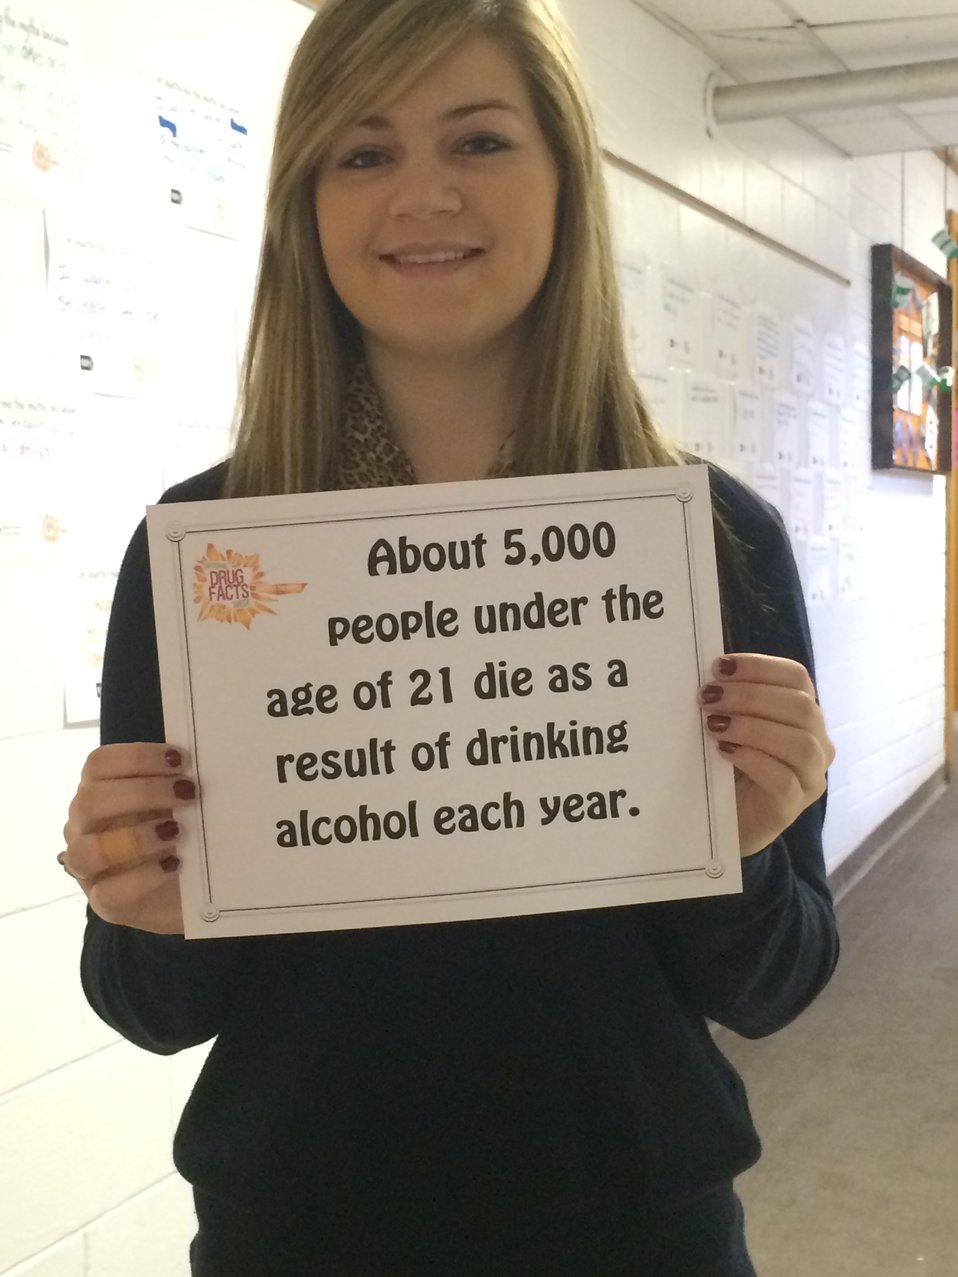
Teens and Alcohol: NDFW Factoid

Teenagers from the Van Buren County SAFE Coalition's, Youth Leadership Council (YLC) in Keosauqua, Iowa participate in various events during National Drug Facts Week, 2014.